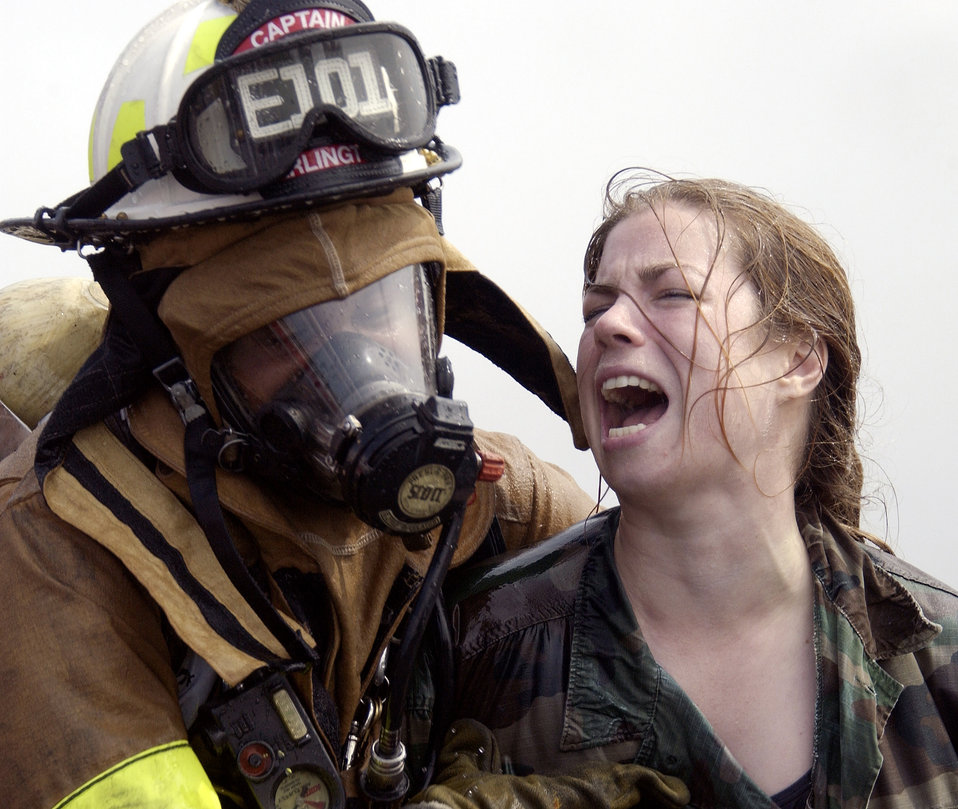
Gallant efforts

WASHINGTON -- A firefighter from Arlington County, Va., escorts a volunteer victim through a simulated decontamination area in the Pentagon's south parking lot during exercise Gallant Fox on July 24. Gallant Fox is a large-scale chemical, biological, radiological and nuclear-training exercise conducted by the Pentagon Force Protection Agency. The exercise provides training in responding to real-world mass casualty scenarios by various local emergency fire, police, medical and hazardous-material response units.